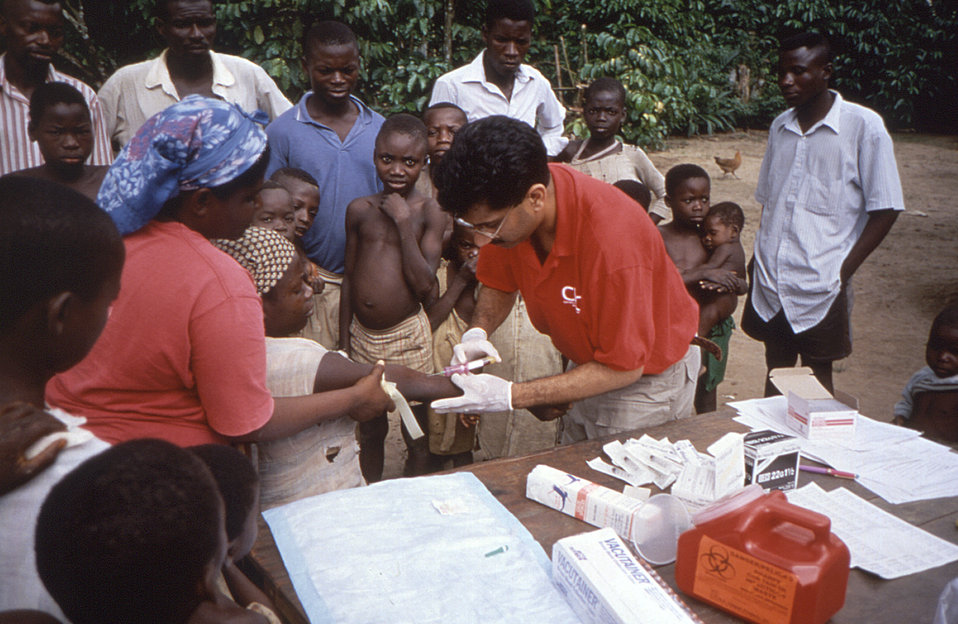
This image was created during an investigation into an outbreak of monkeypox, which took place in the Democratic Republic of the Congo (DRC), 1996 to 1997, formerly Zaire. Pictured here, was epidemiologist Ali Kahn, M.D. and the mission nurse, as they were in the process of 'bleeding', i.e., extracting blood, from one of the village inhabitants.